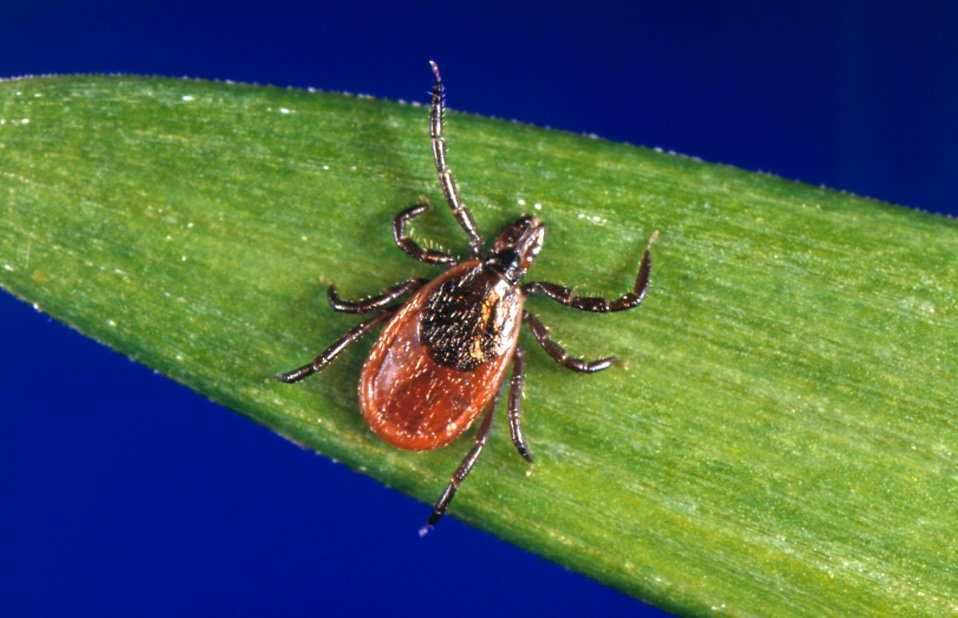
These ''black-legged ticks'', Ixodes scapularis, are found on a wide rage of hosts including mammals, birds and reptiles.